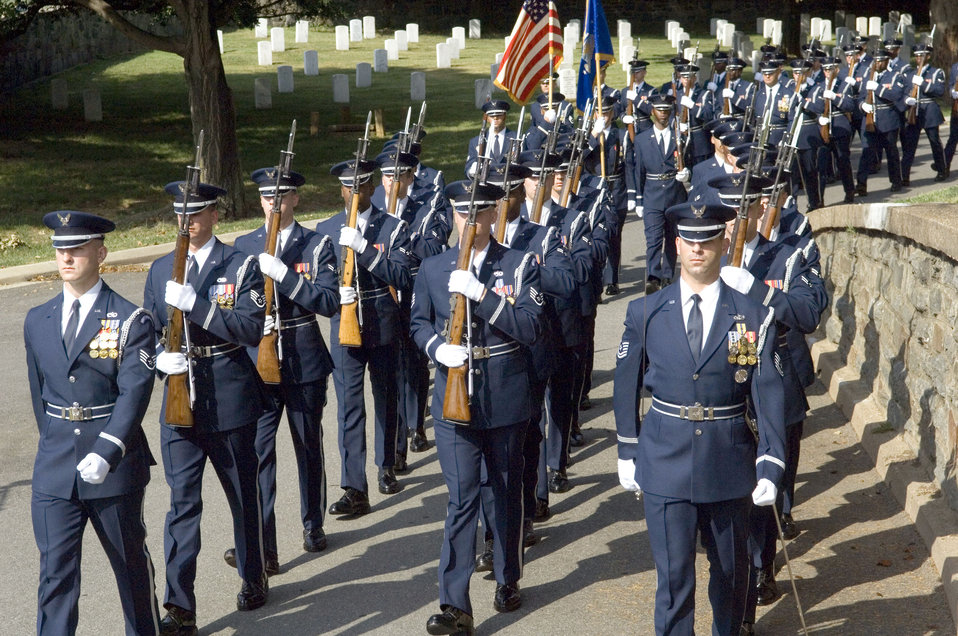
Military pays tribute to World War II bomber pilot

The U.S. Air Force Honor Guard marches in the funeral procession for retired Maj. Gen. Jack I. Posner at Arlington National Cemetery on Aug. 11. General Posner was among the last bomber pilots to have served in World War II.